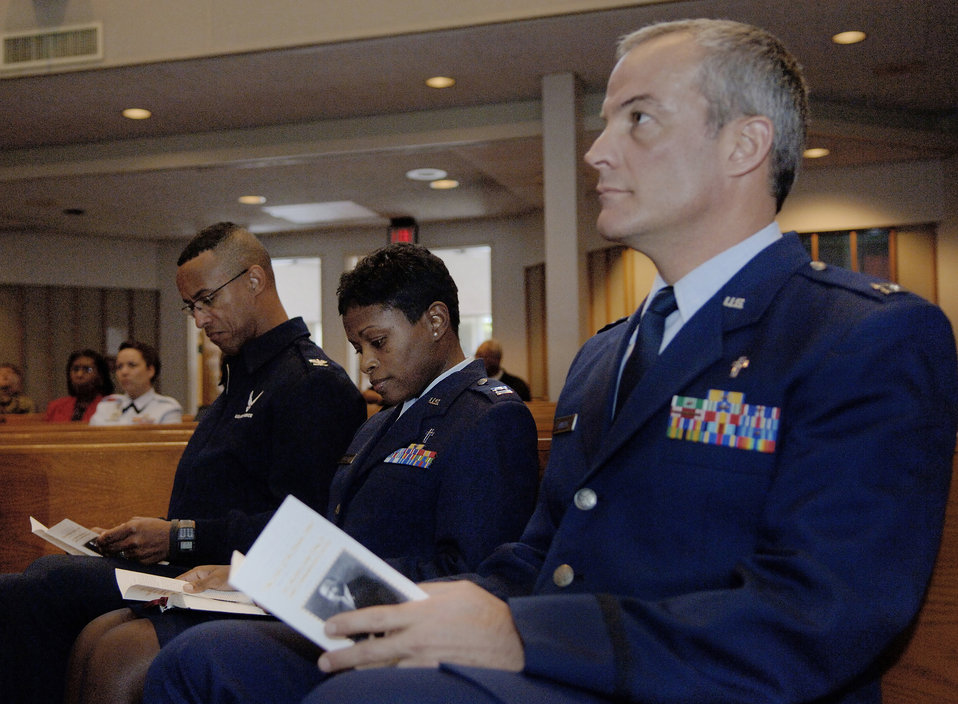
Honoring Martin Luther King Jr.

LACKLAND AIR FORCE BASE, Texas (AFPN) -- Chaplain (Capt.) James Janecek (right) and Chaplain (Capt.) Regina Samuel, and Col. Gerard Joliuette, listen to Chaplain (Retired Col.) Albert Hockaday, during the Dr. Martin Luther King, Jr. 2006 Commemorative Service at the Freedom Chapel here. Captains Janecek and Samuel are chaplains with the 37th Training Wing. Colonel Joliuette is the commander of the 37th Technical Training Group and retired-Colonel Hockaday was the guest speaker at the ceremony.